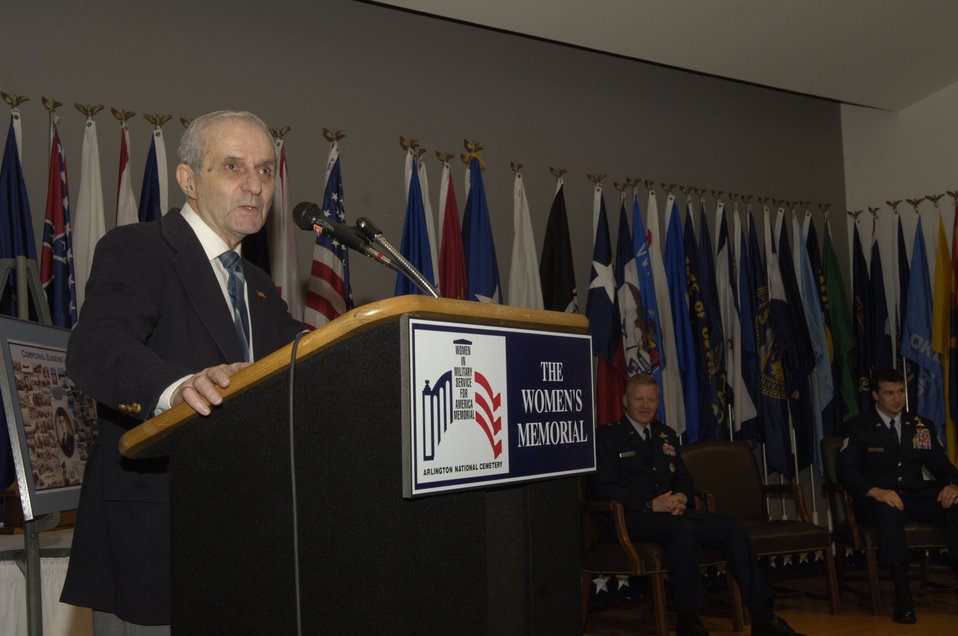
Army Air Corps weatherman honored for D-Day contributions

Dr. Eugene Levine speaks at an Oct. 6 ceremony in Arlington, Va., honoring his support of D-Day during World War II as a weather forecaster. Dr. Levine was presented with an American flag, a shadow box, an assortment of military coins and a 60th anniversary D-Day medallion during the ceremony, officiated by Brig. Gen. Lawrence Stutzriem, director of Air Force weather operations.